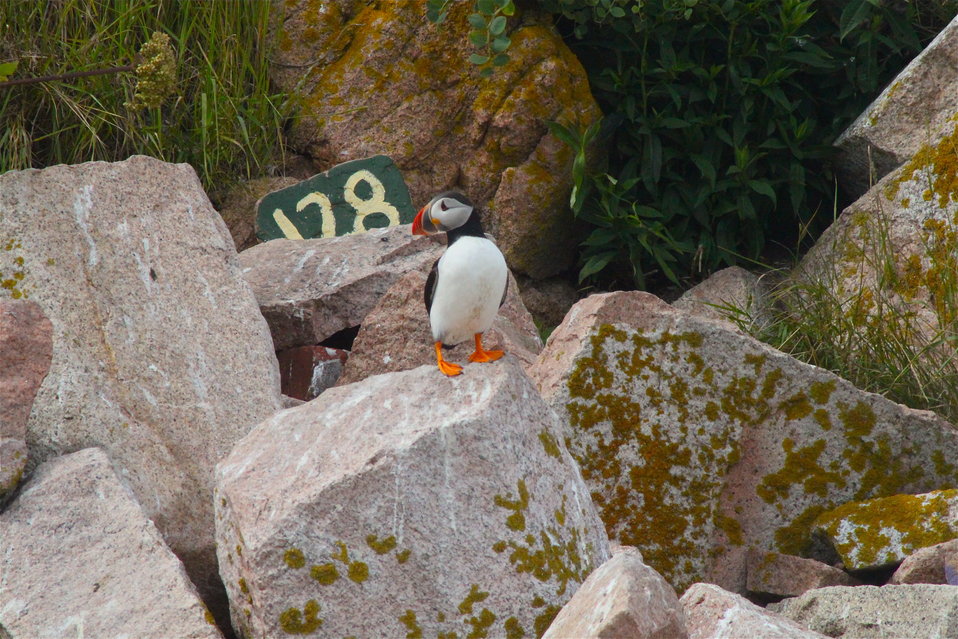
Puffin near a numbered burough